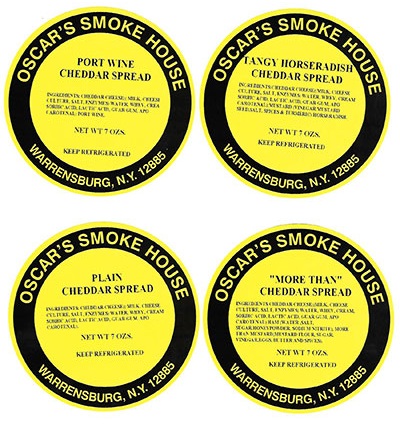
RECALLED – Cheese Spread

March 26, 2014 – Product Recall – Oscar’s Smokehouse, Inc. Recalls “Eleven Varieties (11) Of Cheese Spreads” Because of Possible Health Risk.